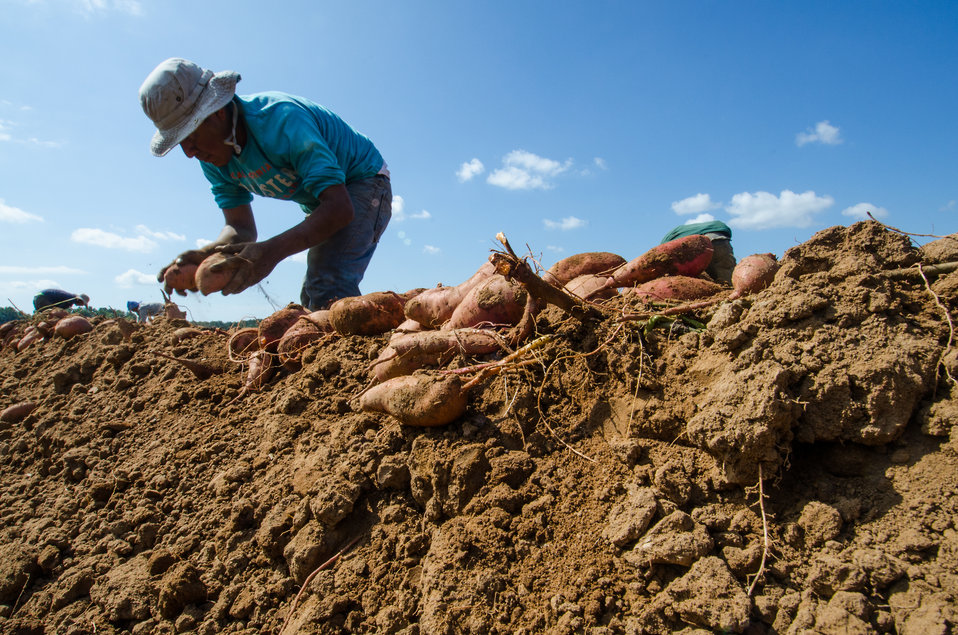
Harvested hand picked large sweet potatoes, at Kirby Farms in Mechanicsville, VA on Friday, Sept. 20, 2013. 200 acres of the farm are devoted to eggplant, spinach, beets, tomato, jalapeno peppers, melons and a variety of greens. Soybeans and small grain are grown on the remaining 300 acres. Using rotational crop practices allows Kirby Farms to double and triple crop yields. Wholesalers, who buy from this farm, sell the produce to major supermarkets in the Mid-Atlantic region, from North Carolina to Maryland. Restaurants in the local area prepare and serve the local bought produce to patrons in the Richmond, VA metropolitan area.